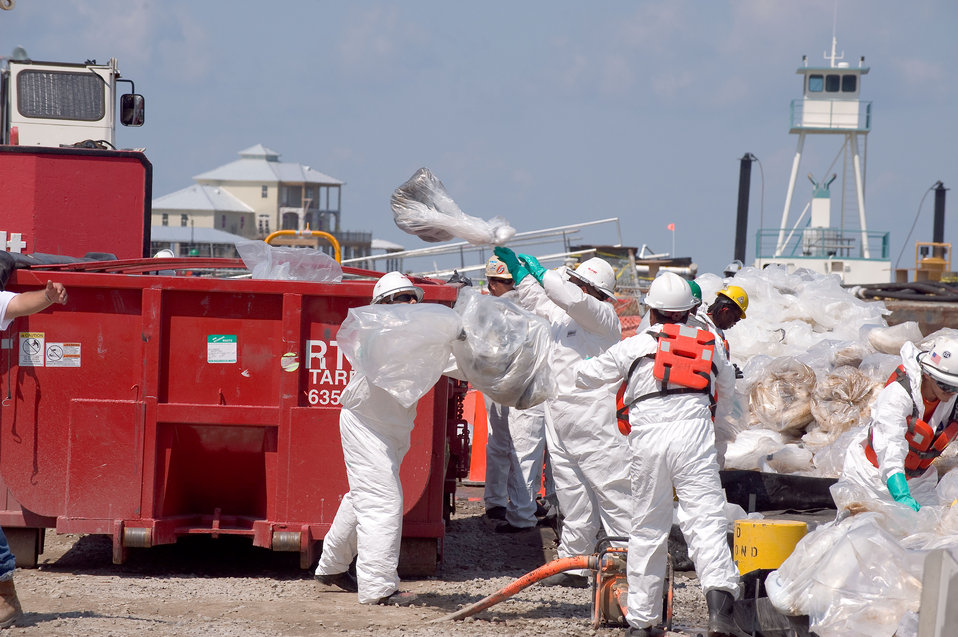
August 7, Oil collected into plastic bags is put into containers for landfill disposal